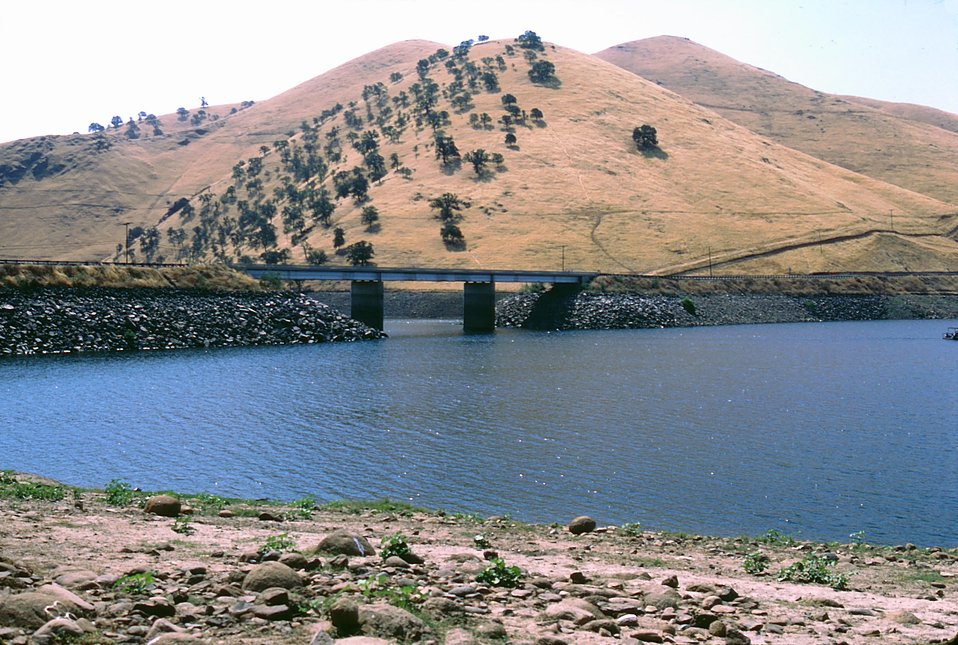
Success Dam

Looking southwest across Success Lake toward the Highway 190, located near Porterville, Calif., Nov. 8, 2004. The U.S. Army Corps of Engineers Sacramento District completed construction of Success Dam in 1961 and the reservoir provides flood risk management, water storage and recreational benefits to the local area.